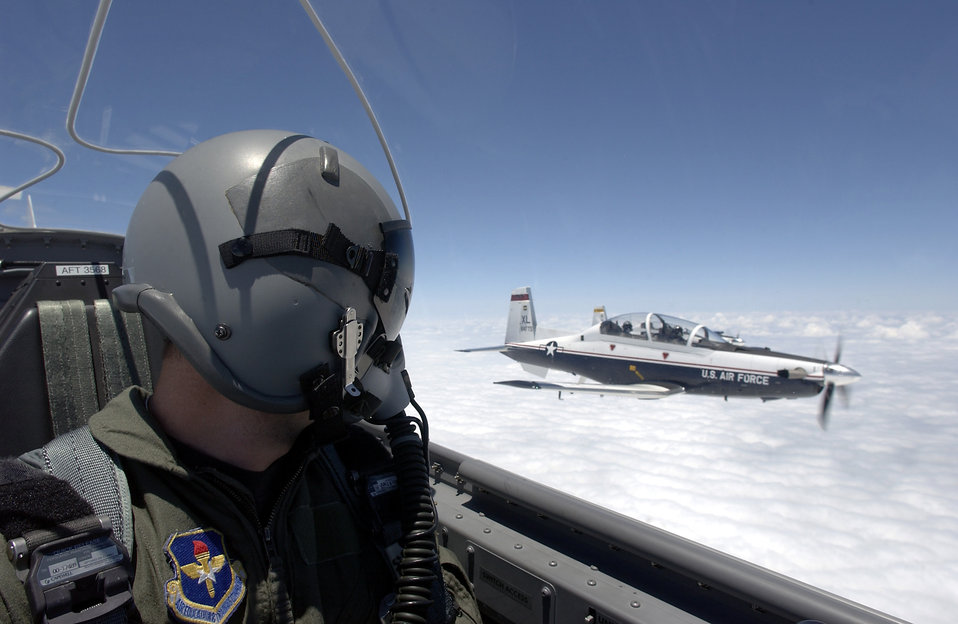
Texans over Texas

OVER LAUGHLIN AIR FORCE BASE, Texas -- A T-6A Texan II pilot flies in formation with another T-6A here May 19. The Texan II is replacing the T-37 Tweet as the primary trainer for Air Force pilots.